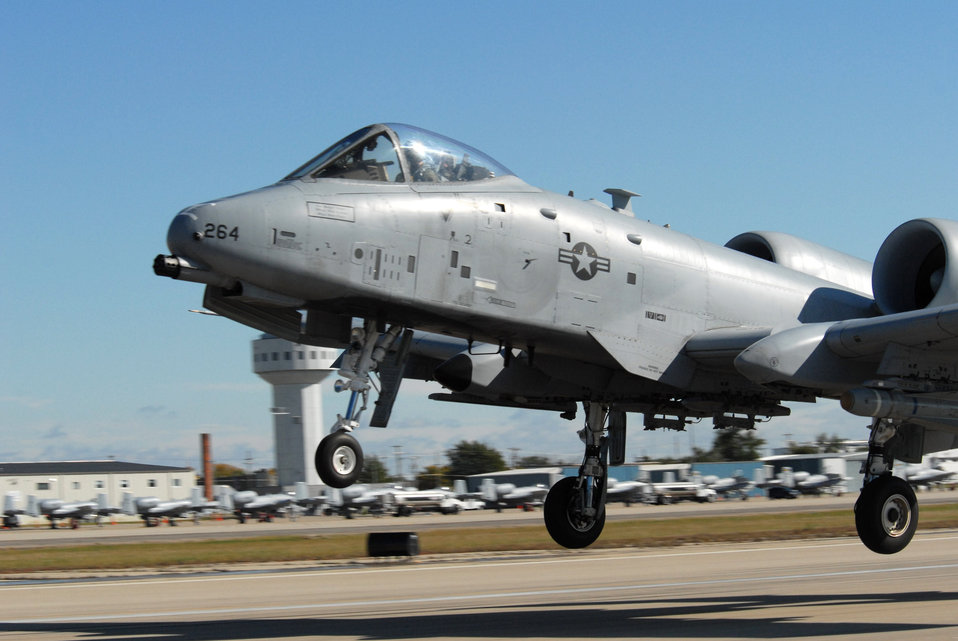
Hawgsmoke 2008

An A-10 Thunderbolt II from the Michigan Air National Guard's 110th Fighter Wing, takes off from the Salina, Kan., airport Oct. 15 for an orientation flight over the nearby Smoky Hill bombing and gunnery range. Thirty A-10s from Air National Guard and Air Force Reserve units across the country have converged on Salina for Hawgsmoke 2008, which will pit active-duty, Reserve and Guard pilots from 14 squadrons against each other in a bienniel bomb and gunnery competition. The competition will last through Oct. 18.